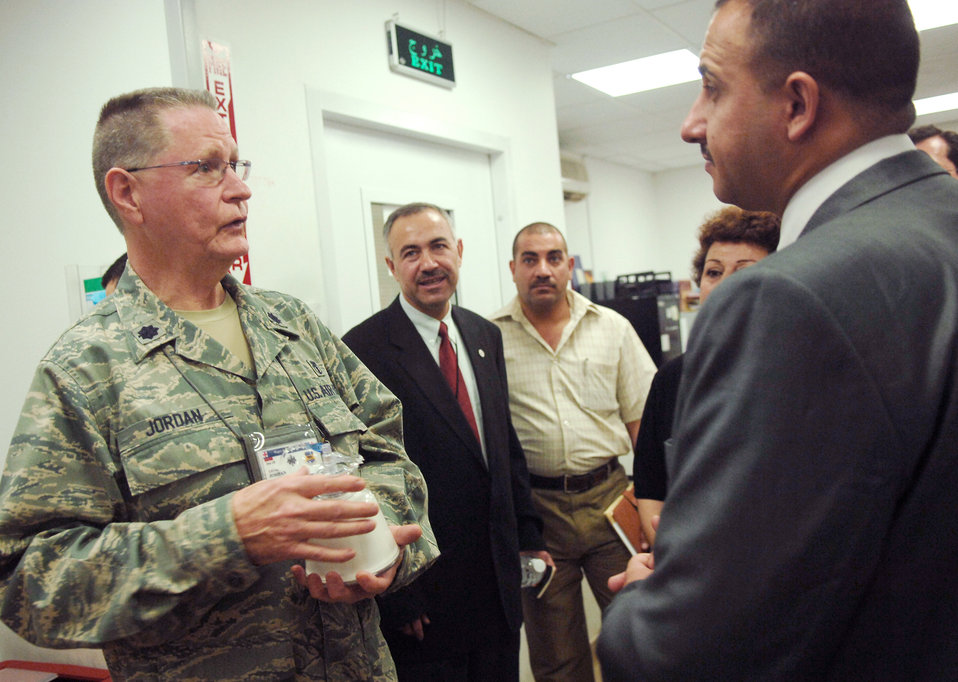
Iraqi official tours Joint Base Balad medical facilities

Lt. Col. Thomas Jordan briefs Iraqi Salah Ad Din Province Deputy Governor Ahmed al-Krayem on how blood platelets affect the Air Force Theater Hospital's mission Aug. 5 at Joint Base Balad, Iraq. Colonel Jordan is the 332nd Expeditionary Medical Support Squadron aphaeresis chief.